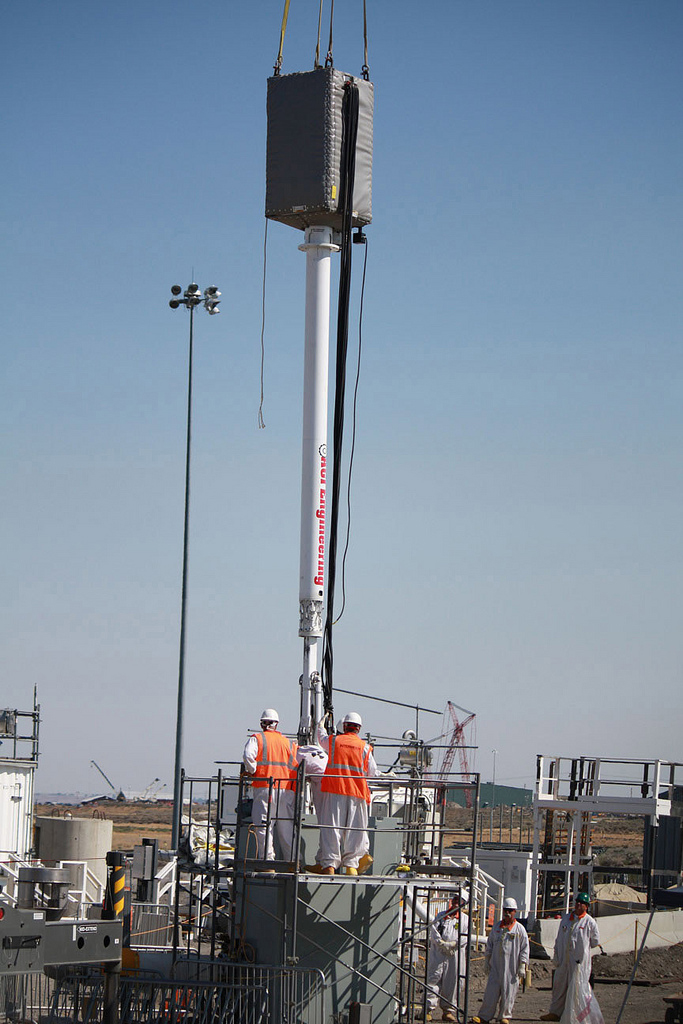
Retrievals continue in tanks C-112 and C-108

For the first time since the 1980s, waste is being retrieved simultaneously from two underground storage tanks. Crews last week began moving waste from C-112, a single-shell tank (SST) containing 104,000 gallons of radioactive and chemical sludge. In addition, workers are soaking the 10,000 gallons of concrete-like solids remaining in Tank C-108 so they can be broken down into a liquid and pumped out.